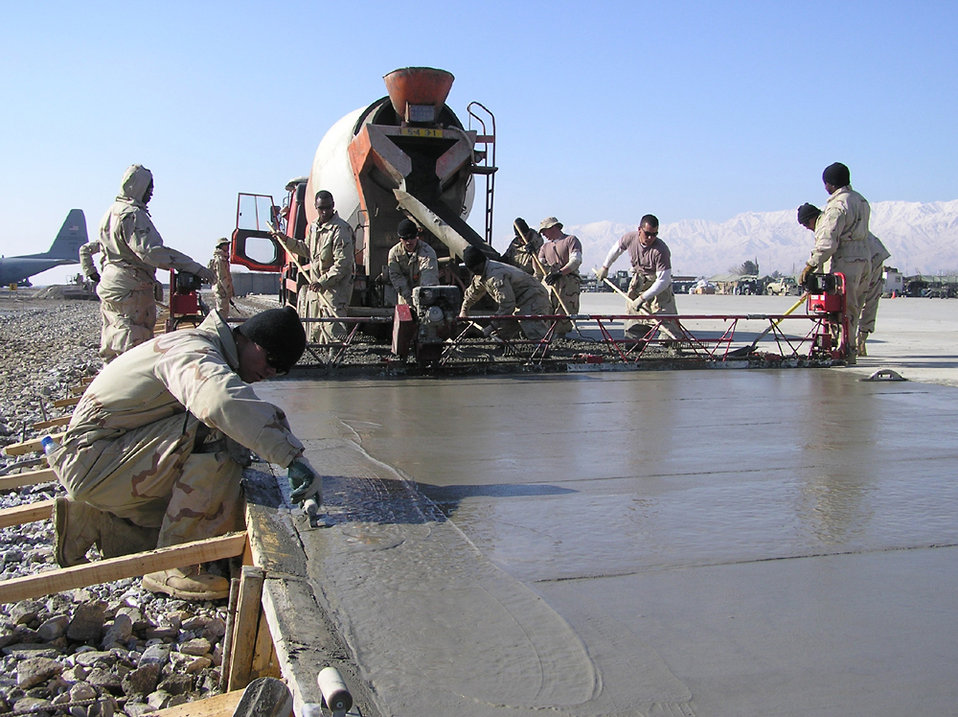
Expanding ramp

BAGRAM AIR BASE, Afghanistan -- Airmen with the 455th Expeditionary Civil Engineer Squadron spread concrete to expand the combat aircraft ramp here. The airmen are deployed from Travis Air Force Base, Calif., and supporting Operation Enduring Freedom.